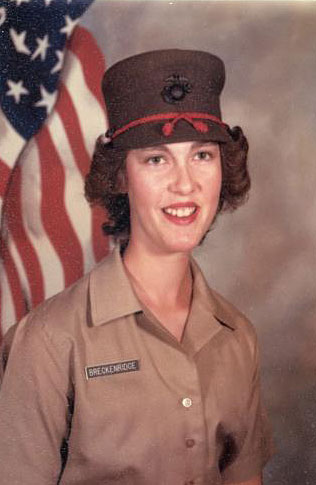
Lorie Brown an Administrative Officer at Necedah National Wildlife Refuge in Wisconsin, served in the U.S. Marine Corps, 1982-1992.